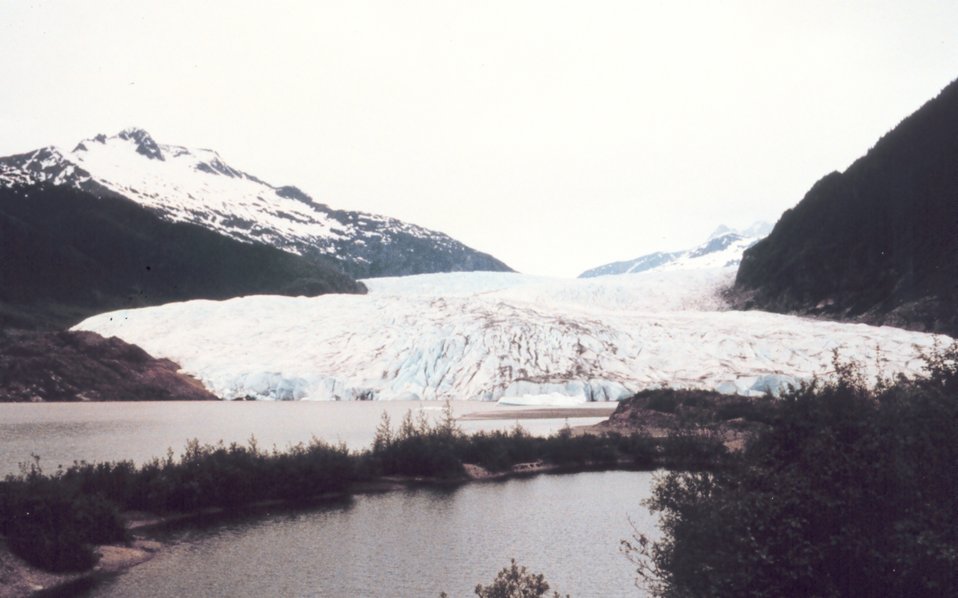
Mendenhall Glacier